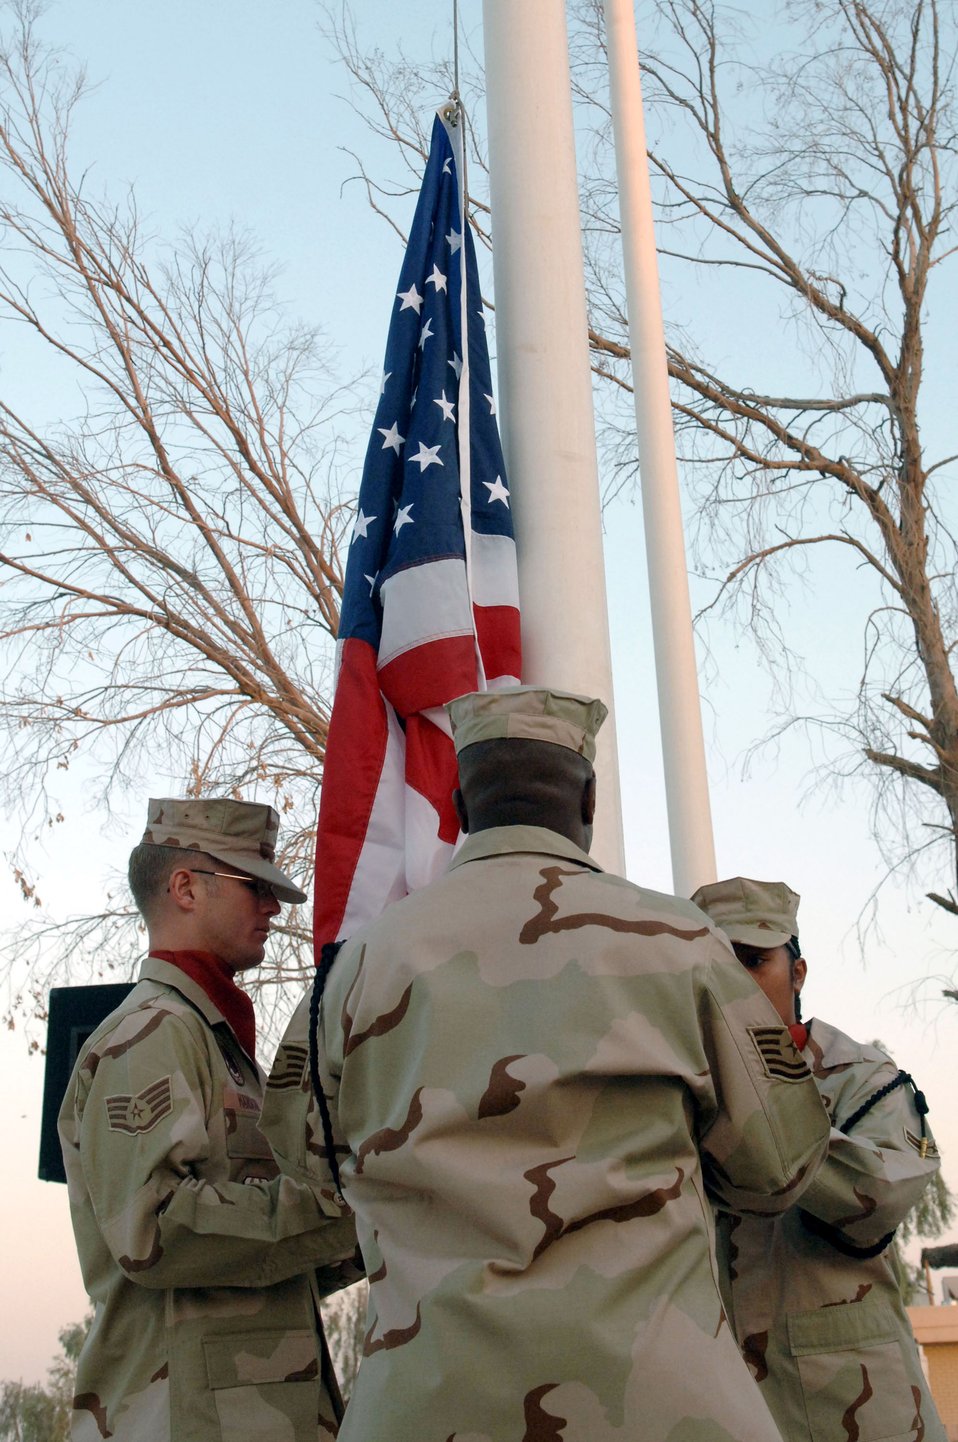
Balad Airmen celebrate Air Force's birthday

Staff Sgt. Joshua Hanson, Tech. Sgt. Sean Hannah and Senior Airman Joyleen Roberts raise the American flag during a reveille ceremony Sept. 18 at Balad Air Base, Iraq. Members of the 332nd AEW, the most forward-deployed Air Force wing in Iraq, held the ceremony in observance of the Air Force's 60th birthday. The wing draws its heritage from the famed 332nd Fighter Group, led by the Tuskegee Airmen of World War II, and carries this spirit in operations here. Sergeants Hanson, Hannah and Airman Hannah are from the 332nd AEW Honor Guard.